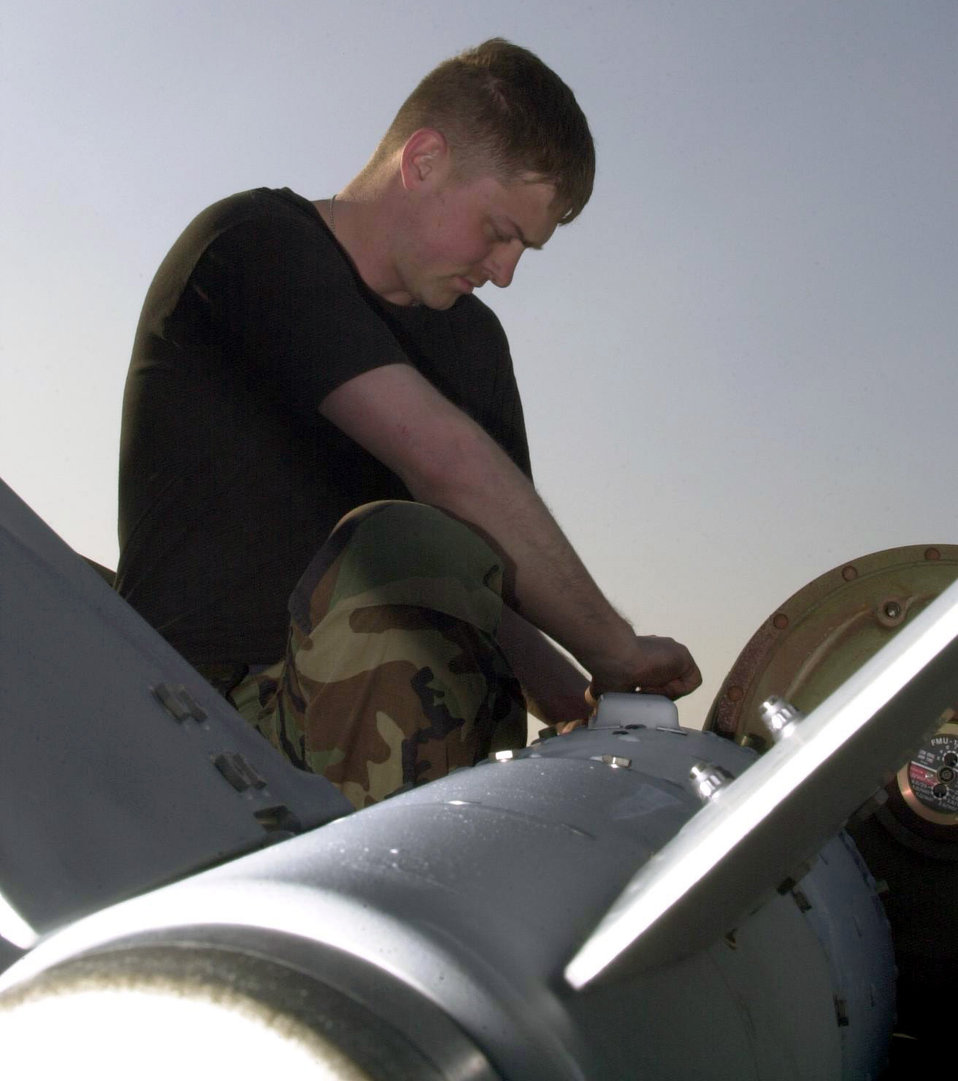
Smarter than you average bomb

OPERATION IRAQI FEEDOM -- Airman 1st Class Richard Ludlum, from the 5th Expeditionary Maintenance Squadron's munitions flight, prepares an MK-84